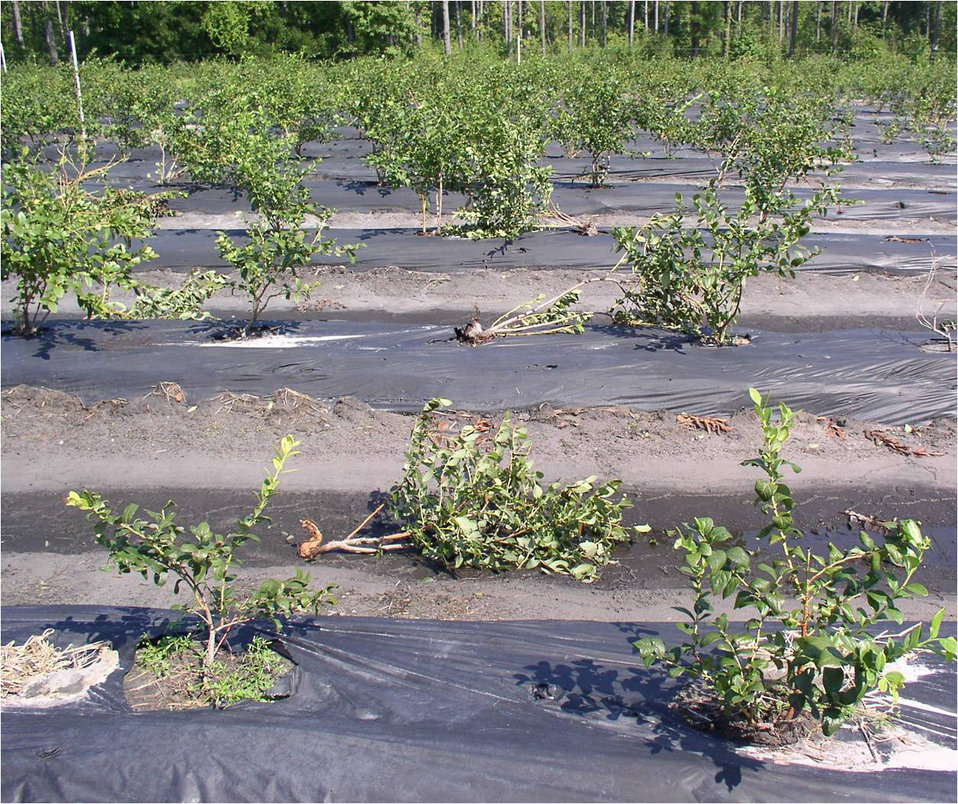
Blueberry Crop damage caused by Hurricane Irene in North Carolina, on Monday, August 29, 2011.